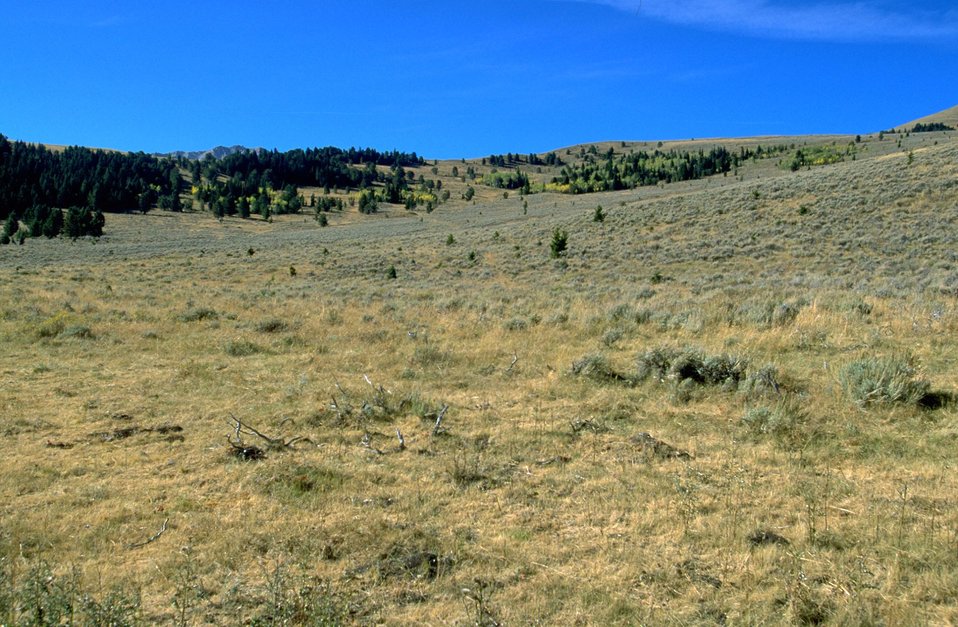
Sagebrush and grassy hillside